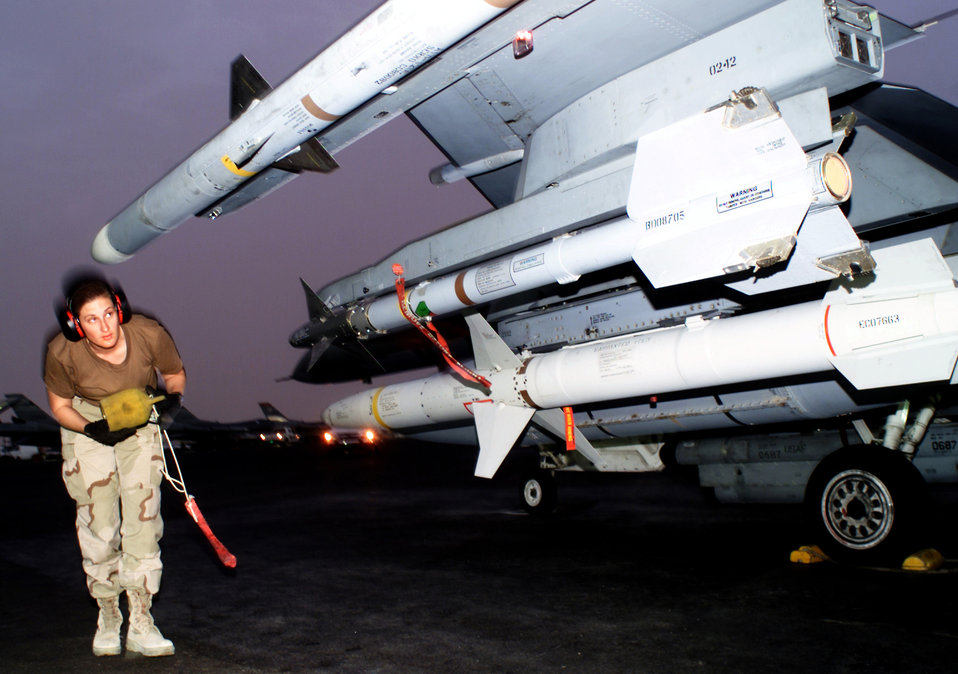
Woodle

OPERATION IRAQI FREEDOM -- Staff Sgt. Amber Woodle, an F-16 Fighting Falcon crew chief, removes missile covers from the fighter jet before it deploys for an Operation Iraqi Freedom night mission. The F-16s are operating from a forward-deployed air base.